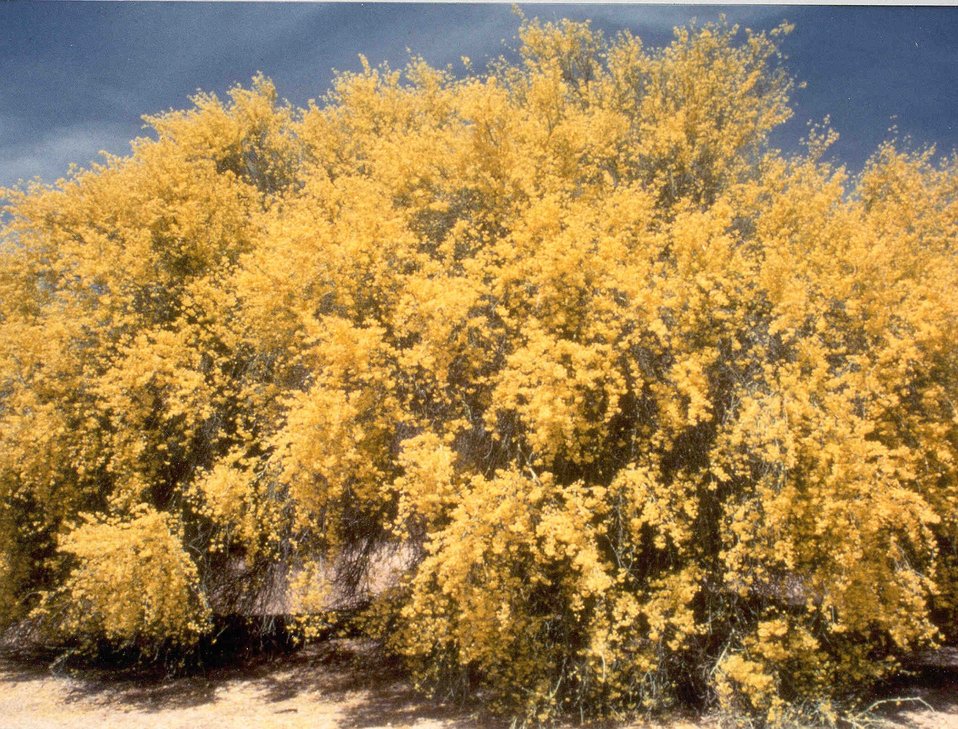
A palo verde tree in full bloom right before a desert storm.